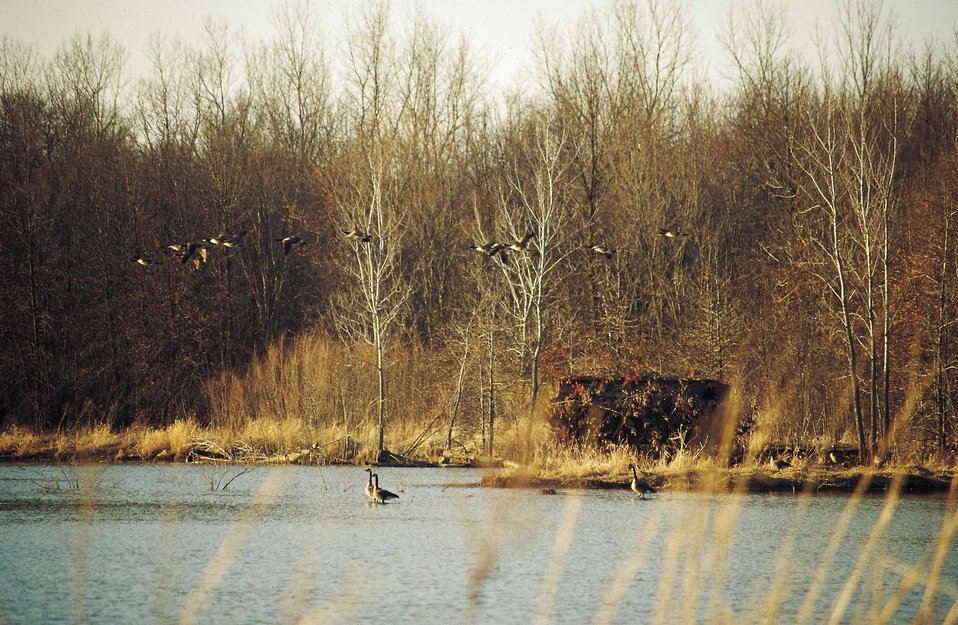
Habitat for ducks and geese on a restored wetland in Van Buren County, Iowa.